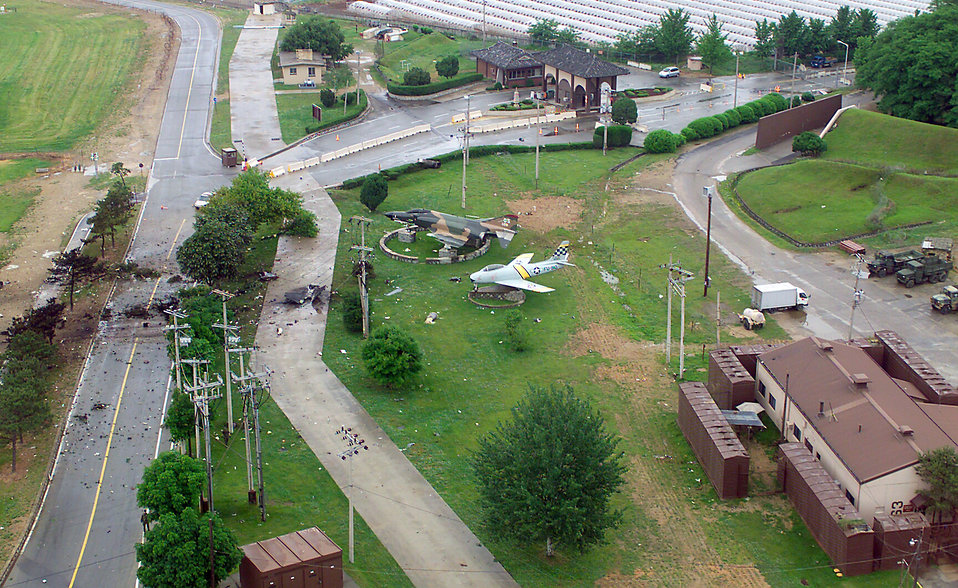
Crash site

OSAN AIR BASE, South Korea -- Remnants of the Air Force F-16 Fighting Falcon lay scattered around aircraft static displays of an F-86 Sabre and F-4 Phantom near the base entrance. A pilot from the 36th Fighter Squadron was taking off on a training mission in the F-16 when the crash occurred May 29.